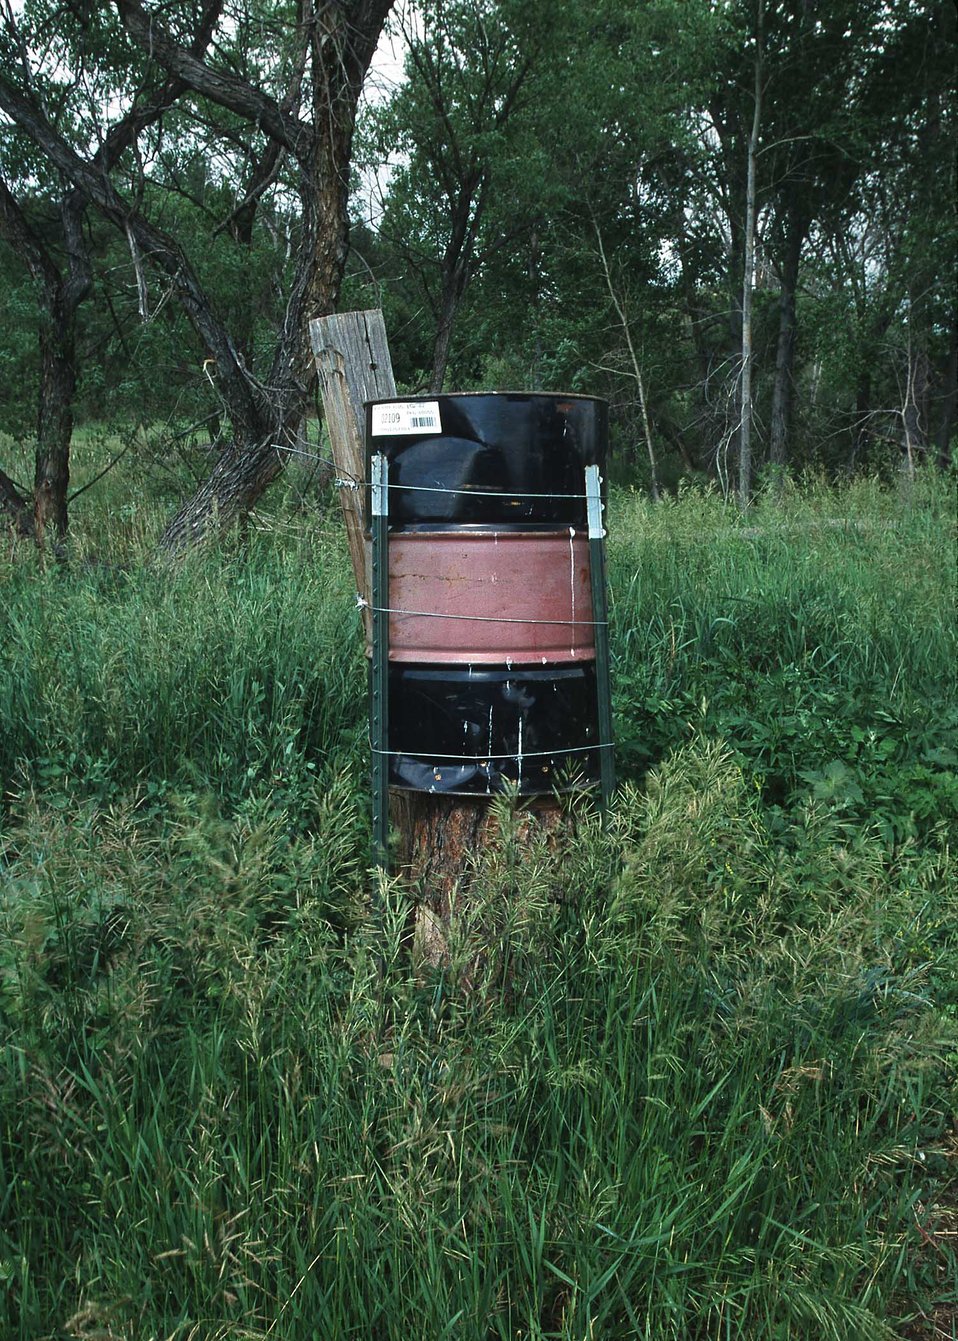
Wildlife Feeder near Spanish Peaks, Colorado.